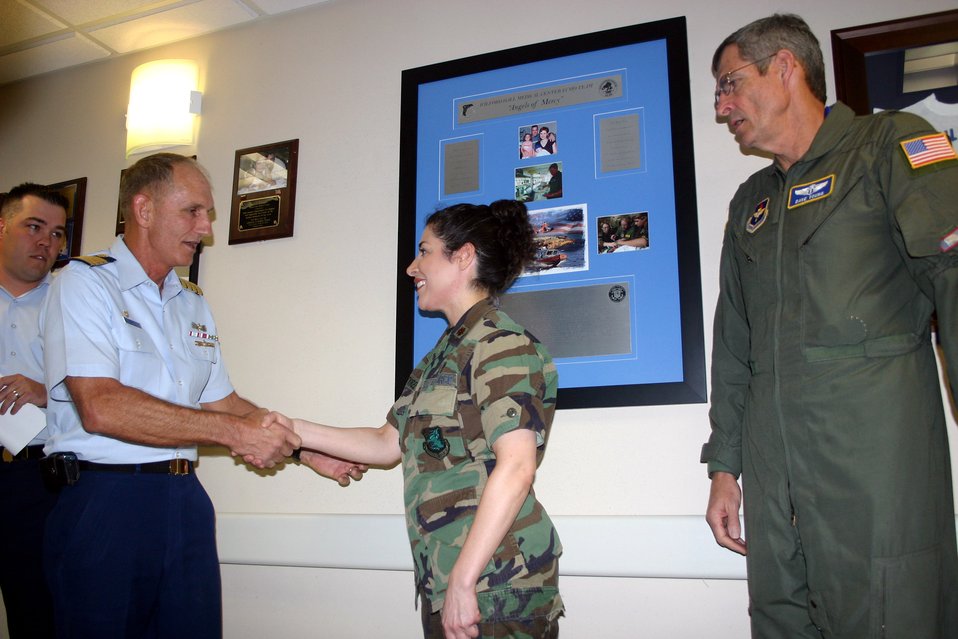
Coast Guard thanks Air Force ECMO team

Maj. (Dr.) Melissa Tyree accepts thanks from Coast Guard Capt. James Tunstall March 29 on behalf of the 59th Medical Wing's Extracorporeal Membrane Oxygenation team as Brig. Gen. (Dr.) David Young, the 59th MDW commander, looks on. Captain Tunstall traveled to Wilford Hall Medical Center at Lackland Air Force Base, Texas, to thank the team for saving the life of baby Stuart Parker, the son of Coast Guard Lt. Seth Parker of San Juan, Puerto Rico.